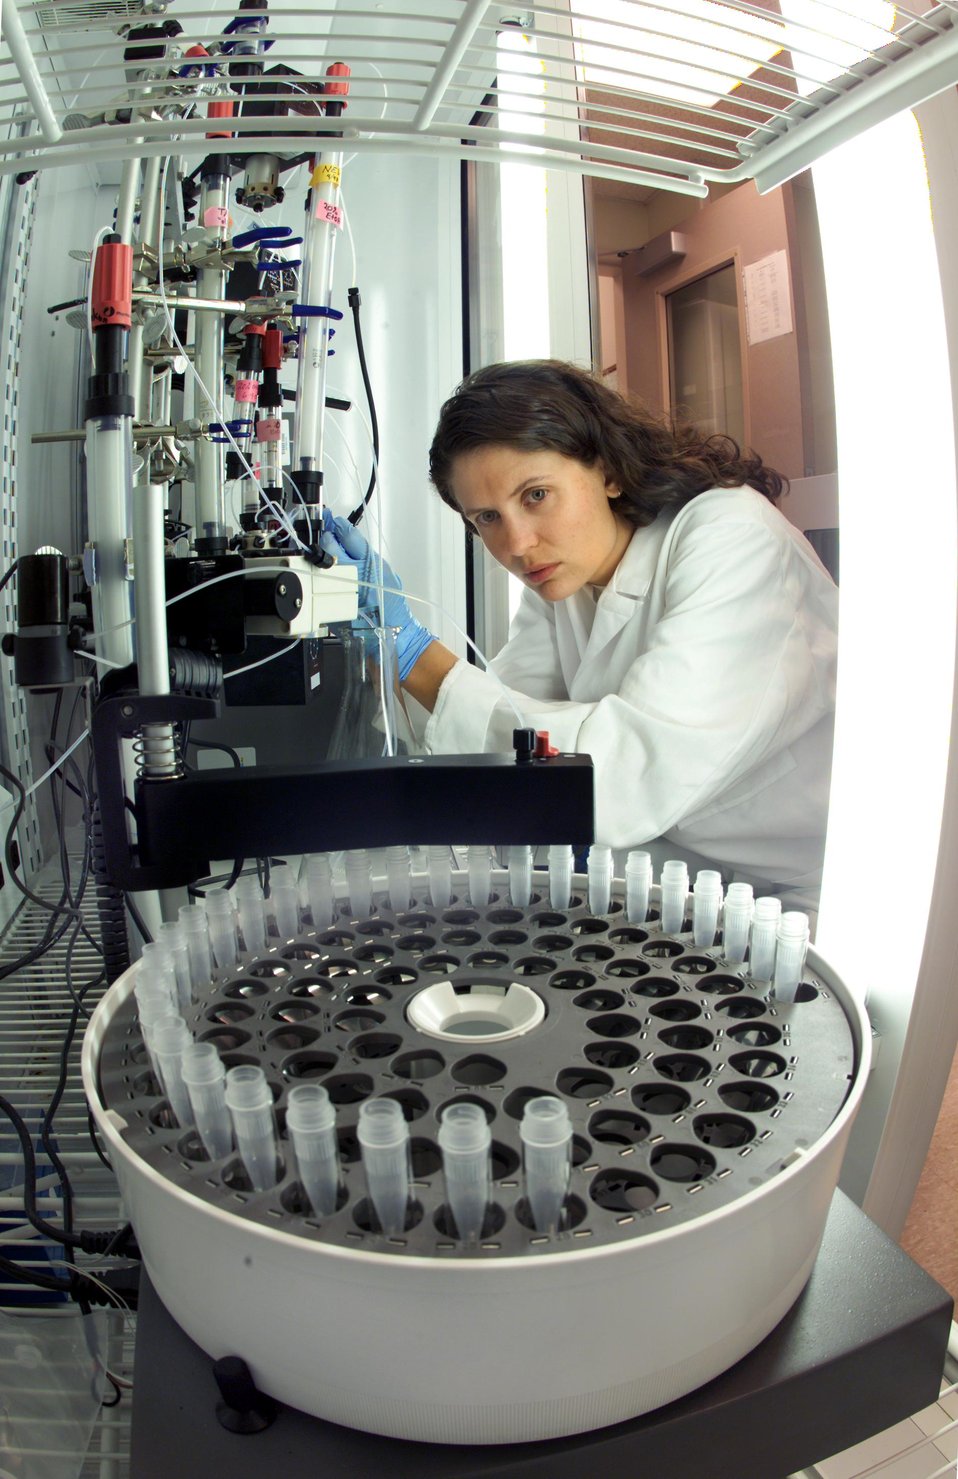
PURIFYING RNA COMPLEX BY GEL FILTRATION.

THE MISSION OF THE DEPARTMENT OF ENERGY'S JOINT GENOME INSTITUTE IS TO DEVELOP AND EXPLOIT NEW SEQUENCING AND OTHER HIGH THROUGHPUT GENOME SCALE AND COMPUTATIONAL TECHNOLOGIES AS A MEANS FOR DISCOVERING AND CHARACTERIZING THE BASIC PRINCIPLES AND RELATIONSHIPS UNDERLYING THE ORGANIZATION, FUNCTION, AND EVOLUTION OF LIVING SYSTEMS.